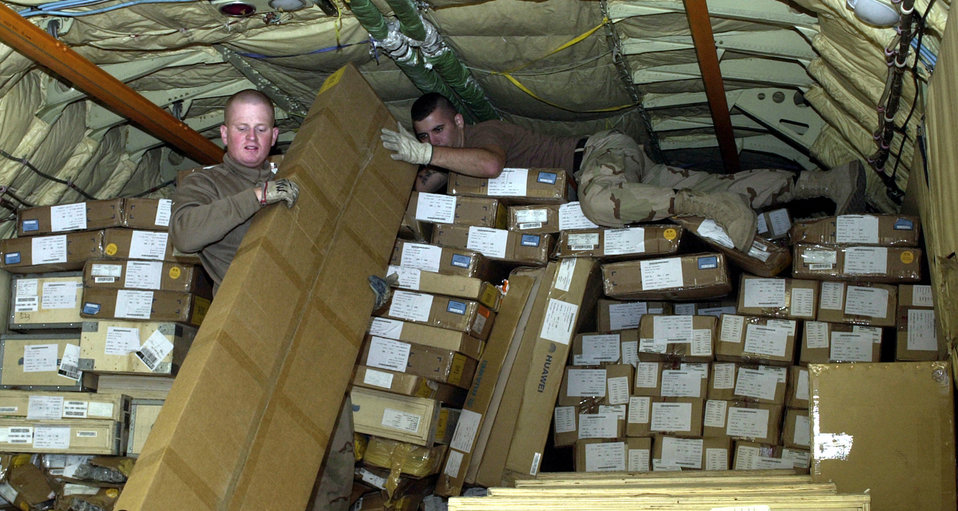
You can hear me soon

KIRKUK AIR BASE, Iraq -- Airman Aaron Belew (left) and Airman 1st Class Cody Vice unload a piece of cargo from a commercial IL-76 cargo aircraft here. Almost 1,000 pieces of telecommunications equipment was unloaded by hand during two trips to the base. The equipment will be sent to the city of Kirkuk to establish northern Iraq's first cellular telephone network. Both airmen are assigned to the 506th Expeditionary Logistics Readiness Squadron.